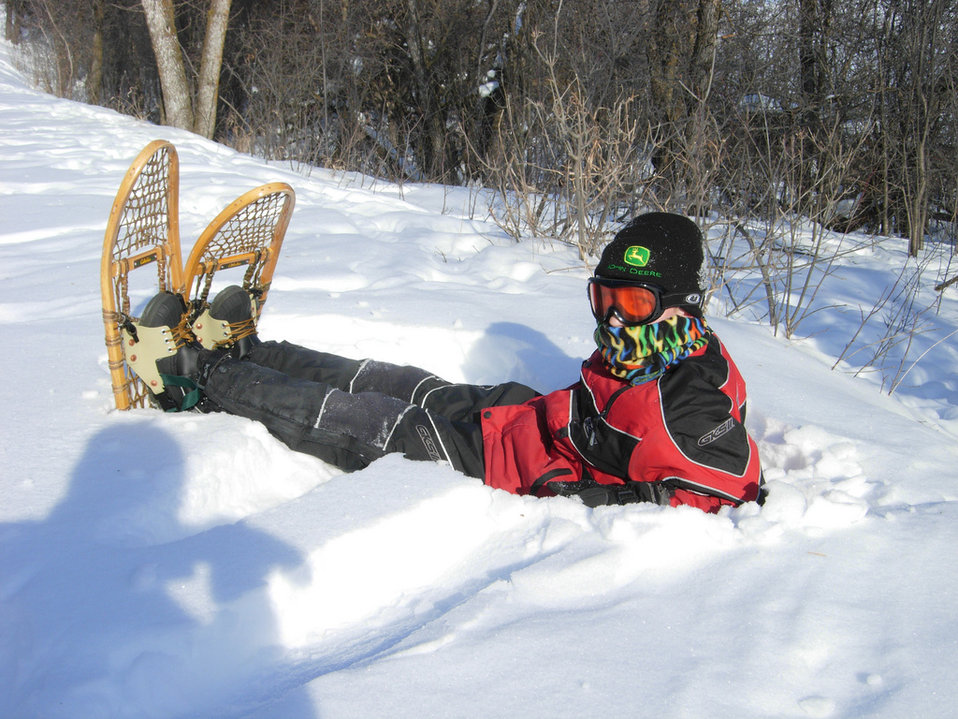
Snow break

A snowshoer at Des Lacs National Wildlife Refuge, ND